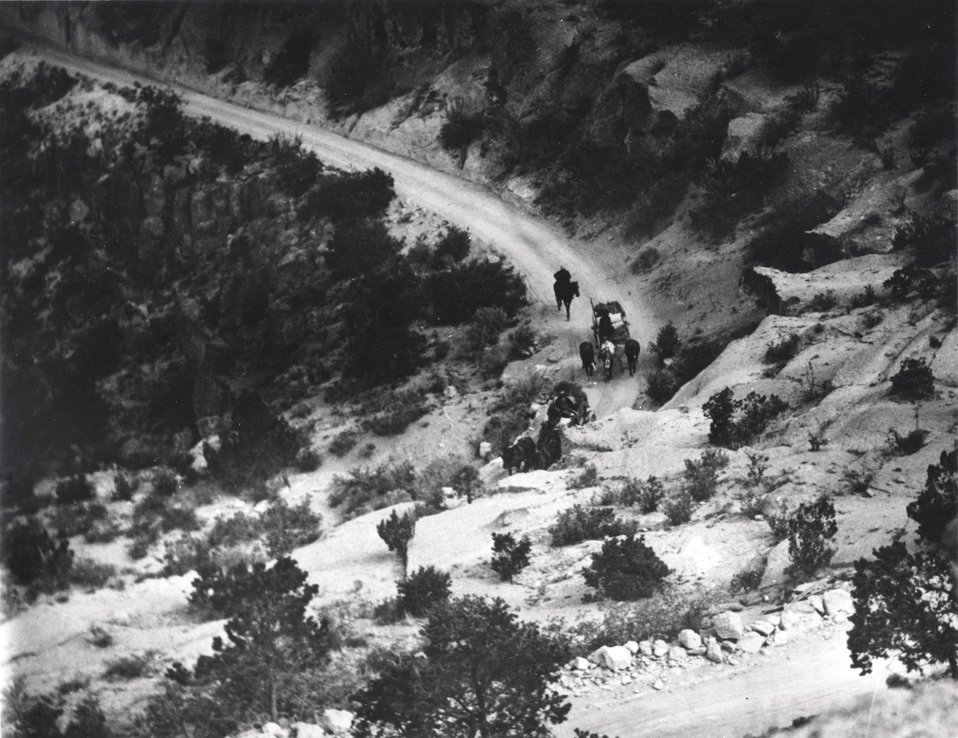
ROAD TO LOS ALAMOS